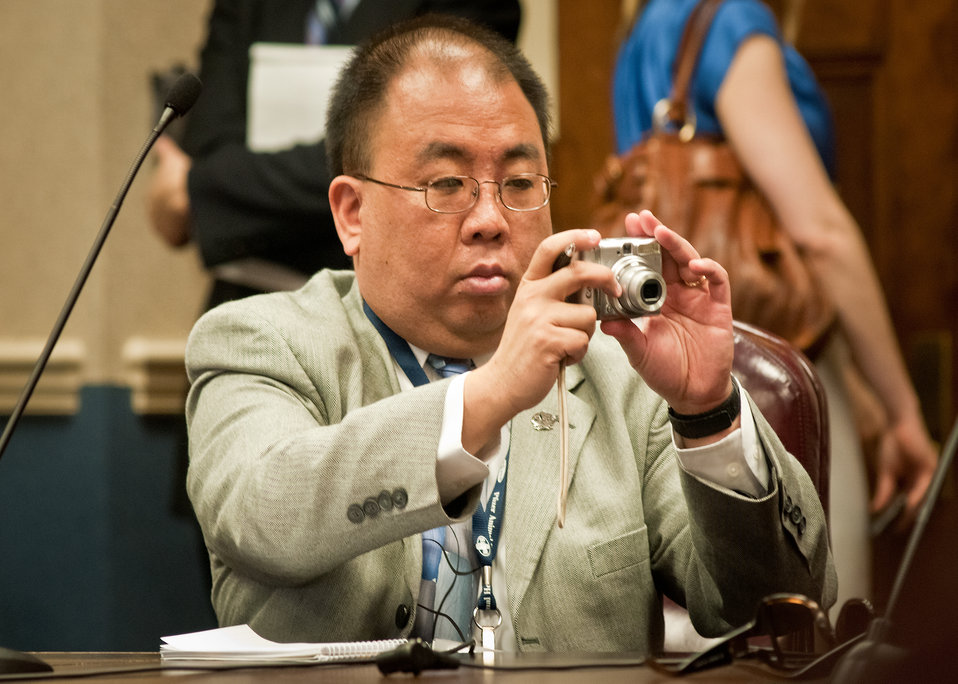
Gregg Akagi, Farm Editor, Kansas Radio Networks and Past President of the National Association of Farm Broadcasters photographs Agriculture Secretary Tom Vilsack during a question and answer session on agriculture issues at the United States Department of Agriculture. The NAFB was in Washington, DC, for their annual visit on Tuesday, May 5, 2011.